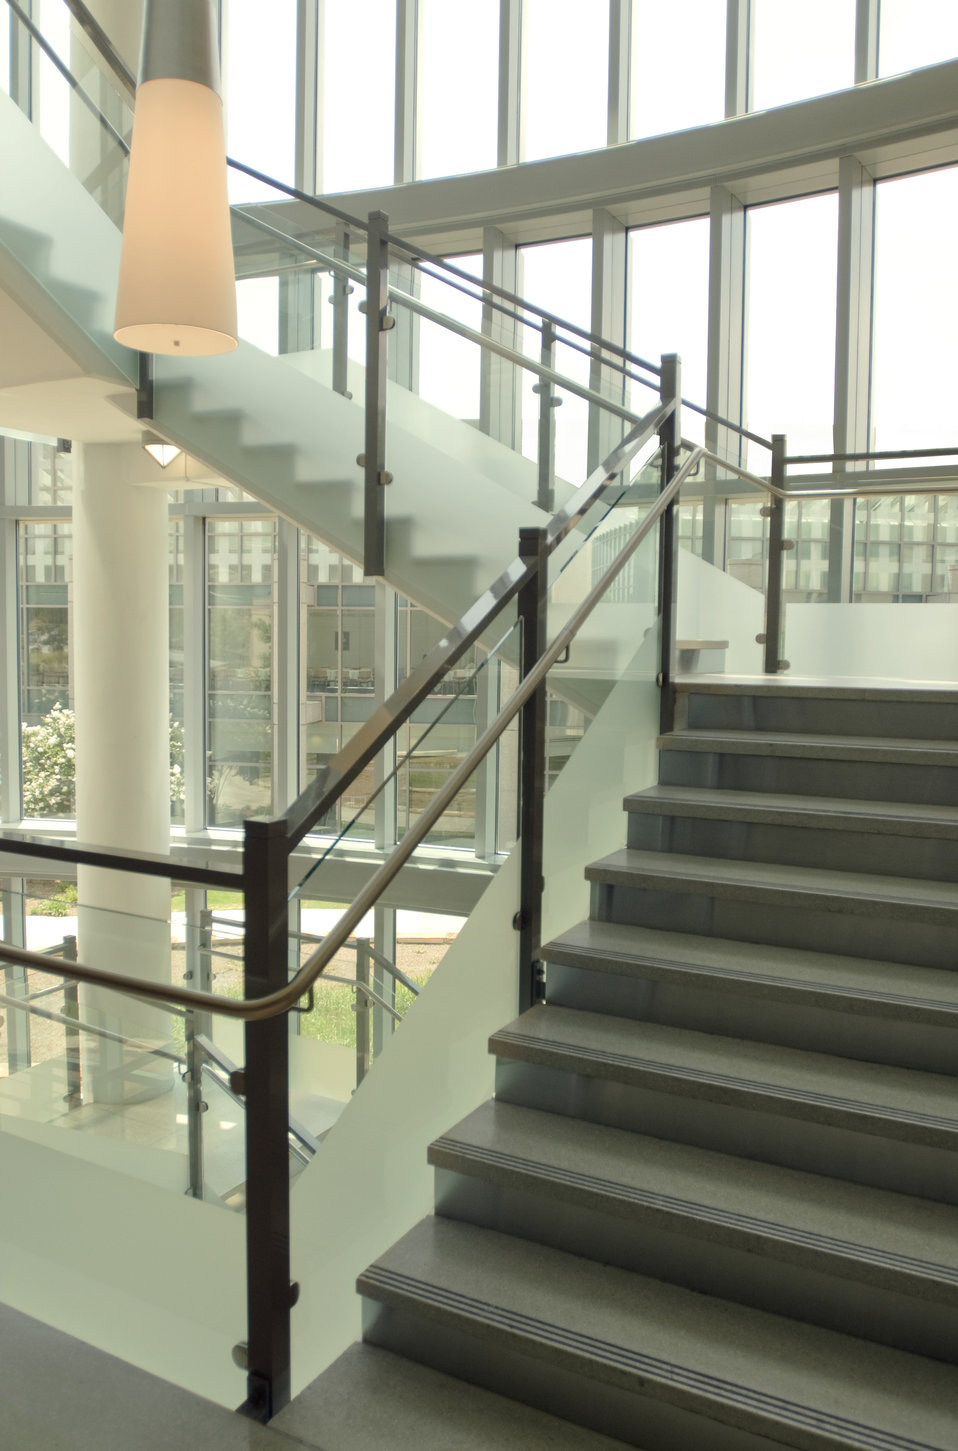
This image depicts a stairwell constructed in an open-architectural style, which was located on the Centers for Disease Control's (CDC) Roybal Campus, located in Atlanta , Georgia. Stairways are located throughout the CDC's facilities, and employees are encouraged to use the stairs whenever possible in order to promote a healthier lifestyle.